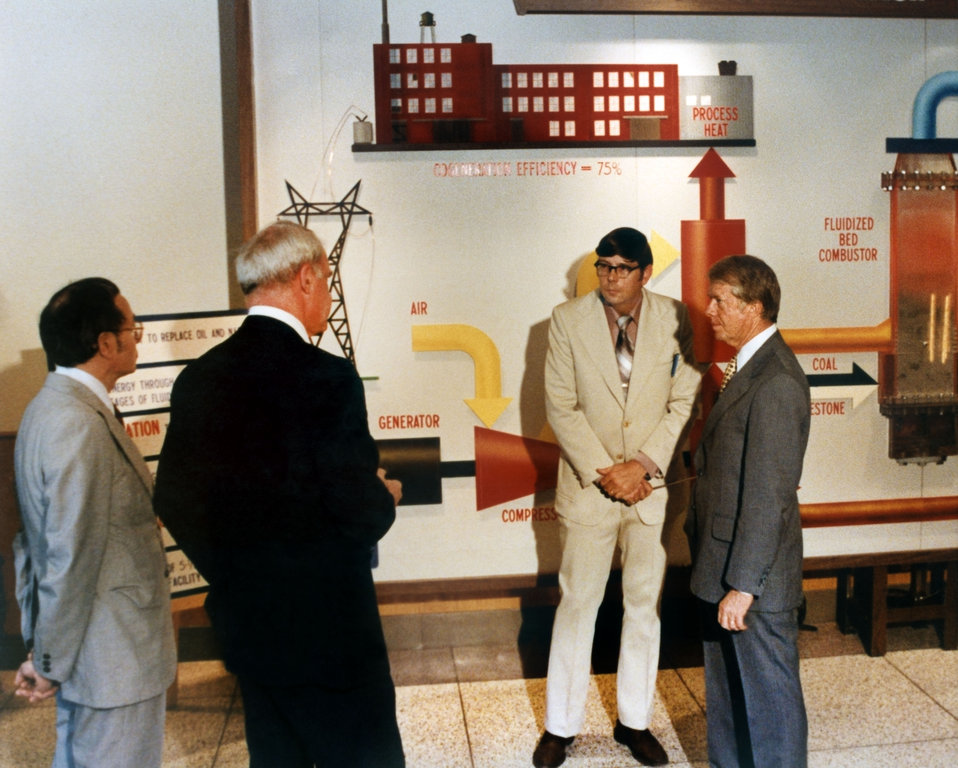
President Jimmy Carter tour of K-25 Oak Ridge

78-326 DOE photo by Frank Hoffman

President Jimmy Carter tour of K-25 Oak Ridge Tennessee 5-22-1978